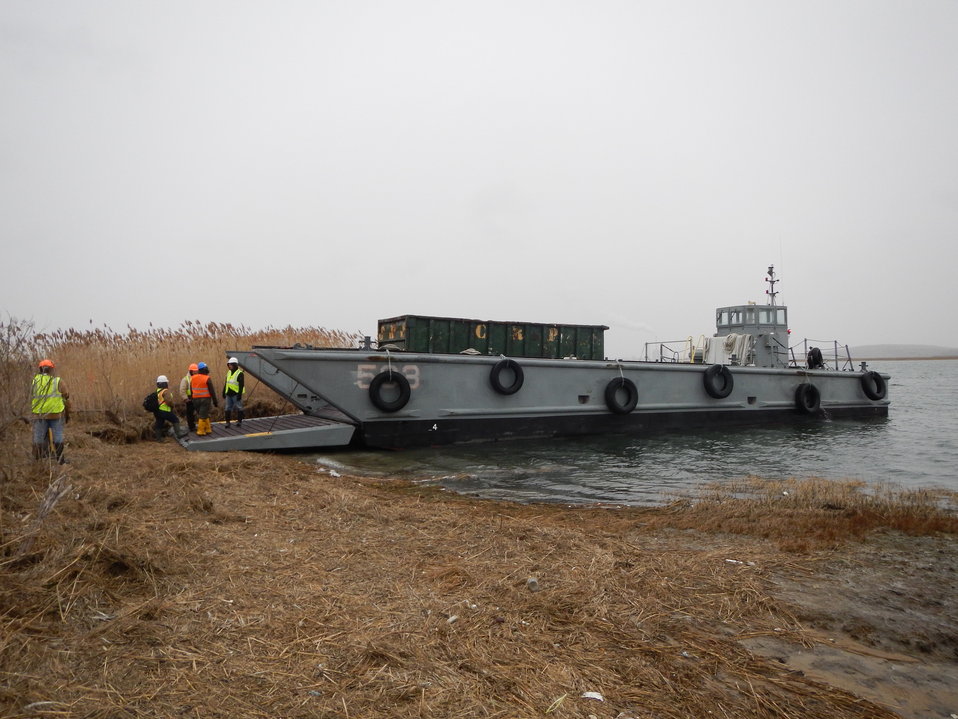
Lido Beach Cleanup-4

Cleanup crews begin a massive debris removal effort at Lido Beach Wildlife Management Area on Long Island.